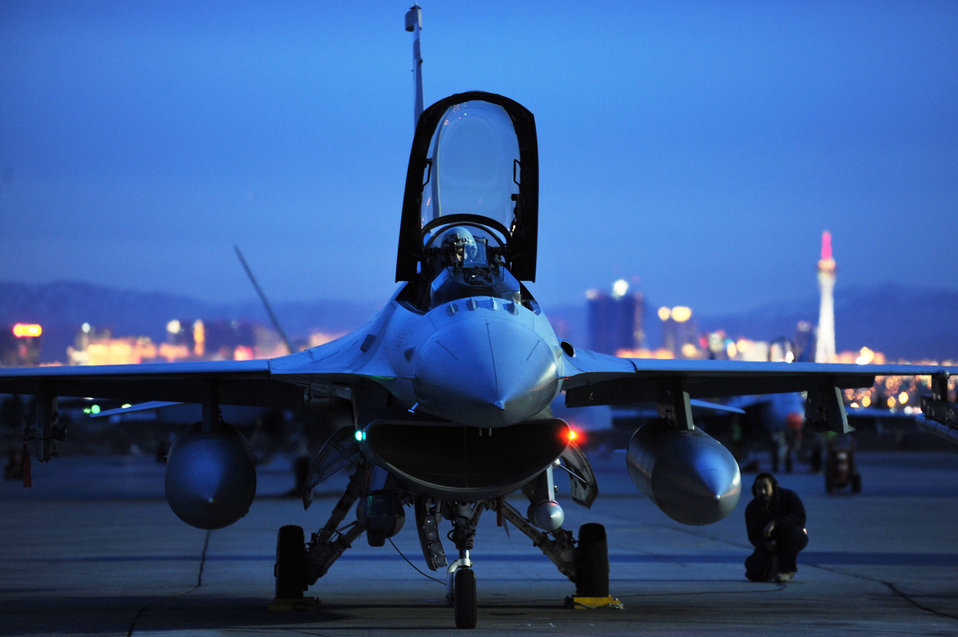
A Las Vegas night

Airman 1st Class Albert Sarroca completes a pre-flight check before launching an F-16 Fighting Falcon on a night training mission at Red Flag Feb. 23, 2010, on Nellis Air Force Base, Nev. Red Flag is a realistic combat training exercise involving the air forces of the United States and its allies. Airman Sarroca is a crew chief with the 20th Aircraft Maintenance Squadron from Shaw AFB, S.C.